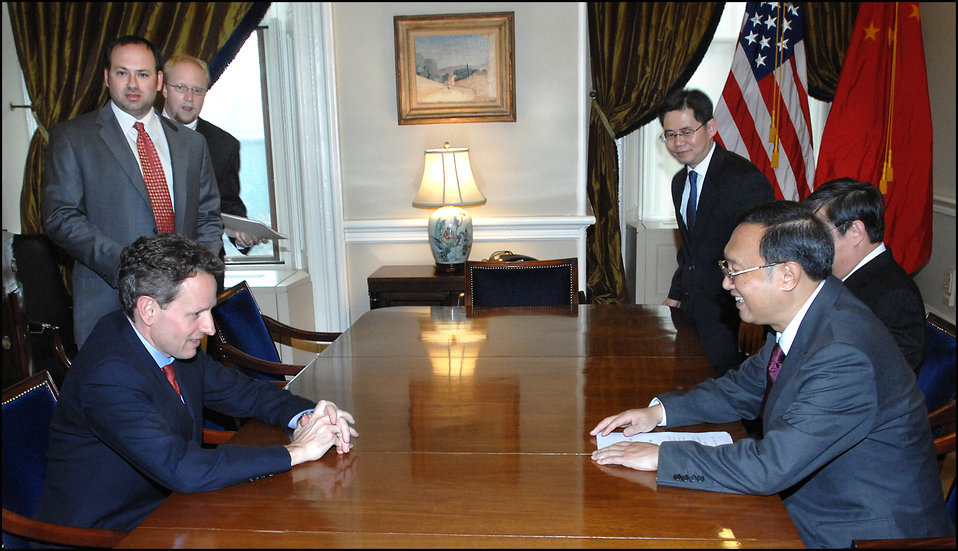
Chinese Foreign Minister Yang Jiechi

Secretary Tim Geithner met on March 11, 2009 with Chinese Foreign Minister Yang Jiechi to discuss the Strategic and Economic Dialogue and issues related to the upcoming G-20 Ministerial meeting.